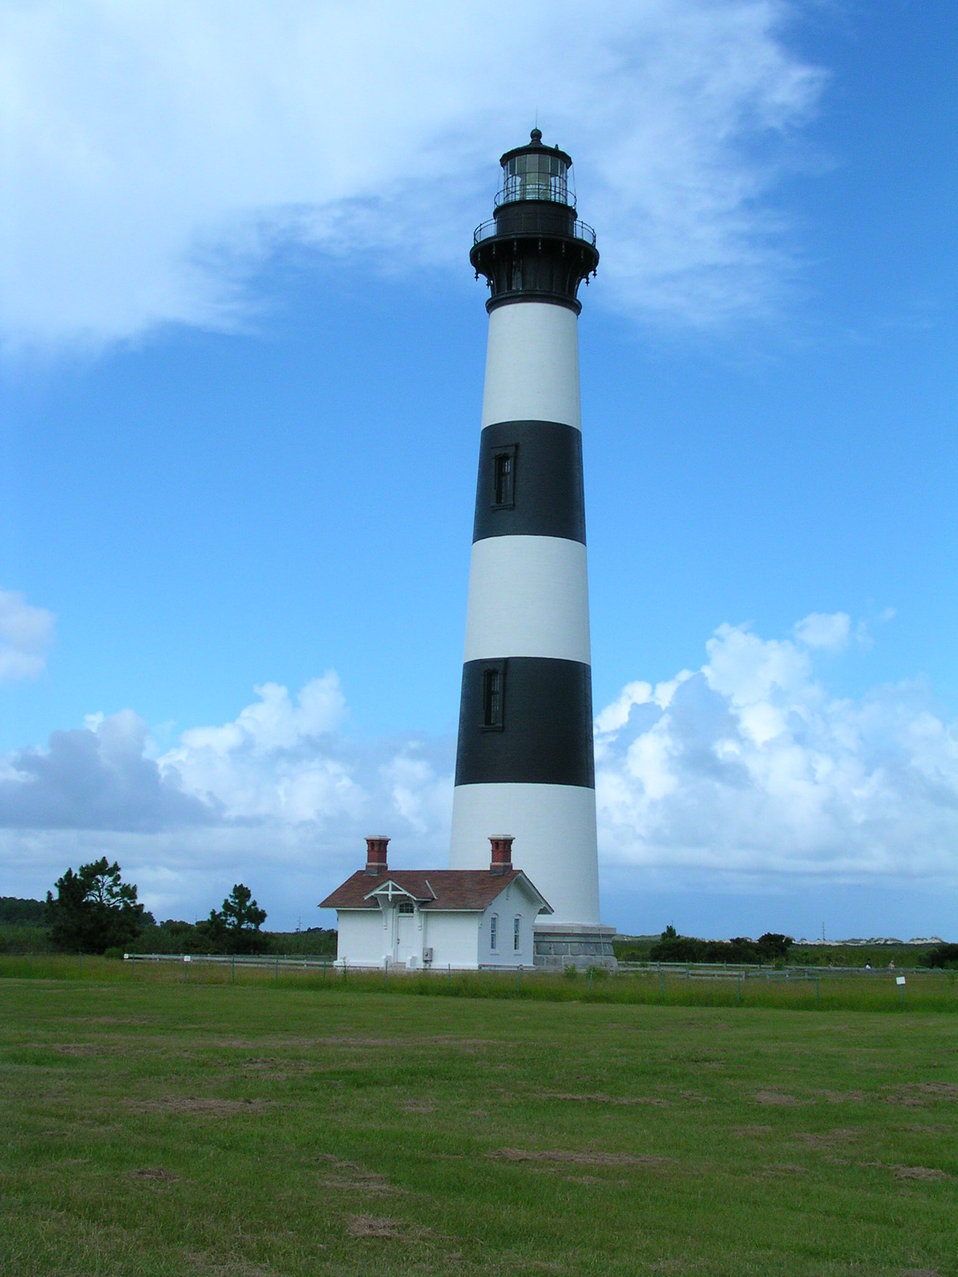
Bodie Island Lighthouse.